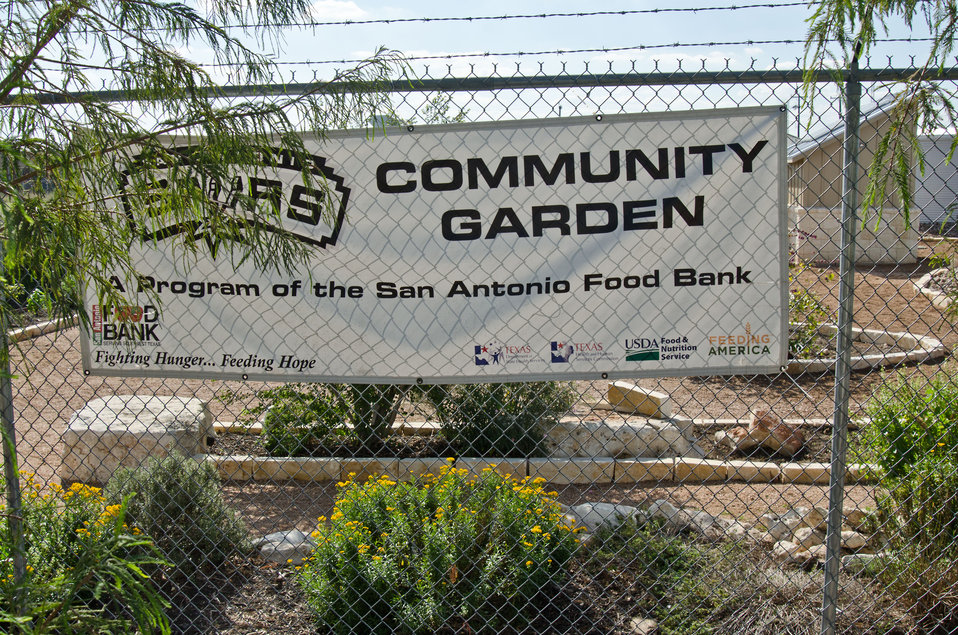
The Spurs Community Garden is part of the San Antonio Food Bank’s Nutrition Education Program and provides garden fresh organic produce to one of it’s sponsors, the United States Department of Agriculture (USDA) Supplemental Nutrition Assistance Program - Education Program (SNAP-ED). This produce is used for presentations about nutrition education, economical ways to increase fruit and vegetable consumption and physical exercise on it’s walking trail to get fit in San Antonio, TX, on Monday, October 31, 2011. The 5.5-acre garden has a teaching/demonstration garden, large –production gardens, and bee hives. In its first year of operation the garden produced 2,640 pounds of produce and attracted 602 volunteers to support it’s operation and improvement. Most of the produce goes to the more than 500 human service agencies and used in its Community Kitchen to support various meal programs, some of which are supported by the USDA. (For more information go to safoodbank.org/index.php/programs/nutrition/community-garden).
“We couldn’t do what we do without our partnership with USDA’” said President and CEO Eric Cooper. He continues, “We are privileged in partnering (with the USDA) to feed kids, through the summer, with the Summer Food Service Program, and throughout the year, with the Child and Adult Care Feeding Program (CACFP). Then in our approach to feeding seniors, we partner with USDA in the CSFP, and the Senior Farmer’s Market (Nutrition) Program. Through the support of the SNAP-Education Program we are able to educate them during their time of need. With this comprehensive approach we are really able to get the right food, the right amount, at the right time, to needy families throughout our community – which allows us to feed the fifty-eight thousand we do, each week.”
SAFB serves 16 counties in Southwest Texas and states, “Nearly one out of every four children and one out of every five adults in Southwest Texas lives in poverty and has difficulty meeting basic nutritional needs.” According to SAFB, sixty-five percent of the people requesting emergency food have children. “Additionally, the senior citizens and those living on a fixed income generally have limited funds for a consistent grocery budget.” USDA photo by Lance Cheung.

www.fns.usda.gov/fns/
www.fns.usda.gov/snap/
www.fns.usda.gov/snap/nutrition education/default.htm